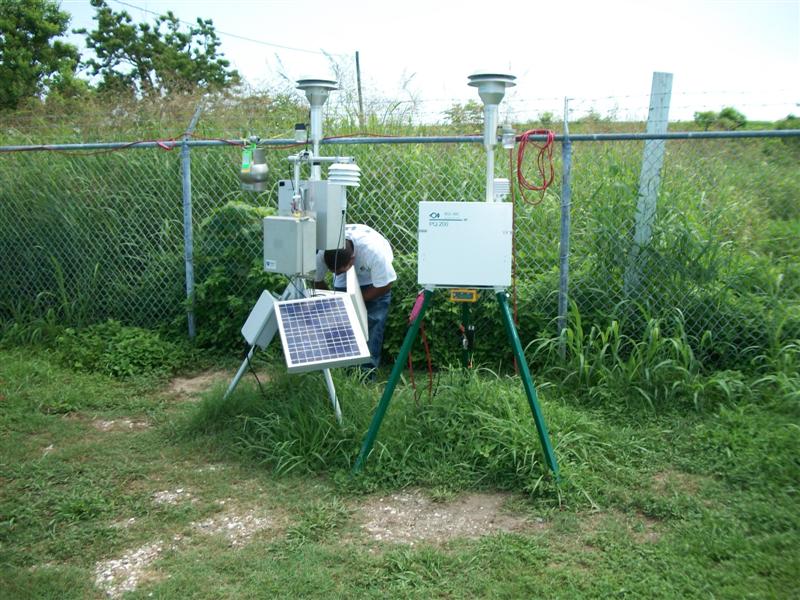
EPA Air Sampling Stations along the Gulf coast

Air sampling stations in Louisiana